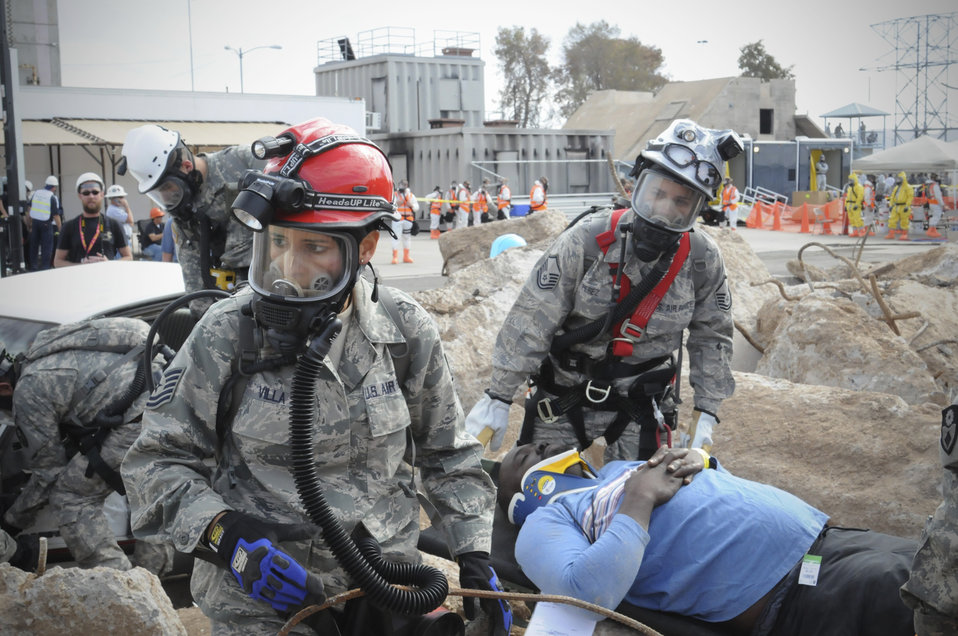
Preparing for the worst

Tech. Sgt. Eliza Villa and Master Sgt. Angelina Perez, both of the 144th Medical Squadron, prepare to transport a patient during the Western States Homeland Response Force exercise in Phoenix, Ariz. The 36-hour exercise tested the team's ability to respond to an emergency and maintain a field hospital. Emergency response units from California, Arizona, Nevada and Colorado were involved in the exercise.